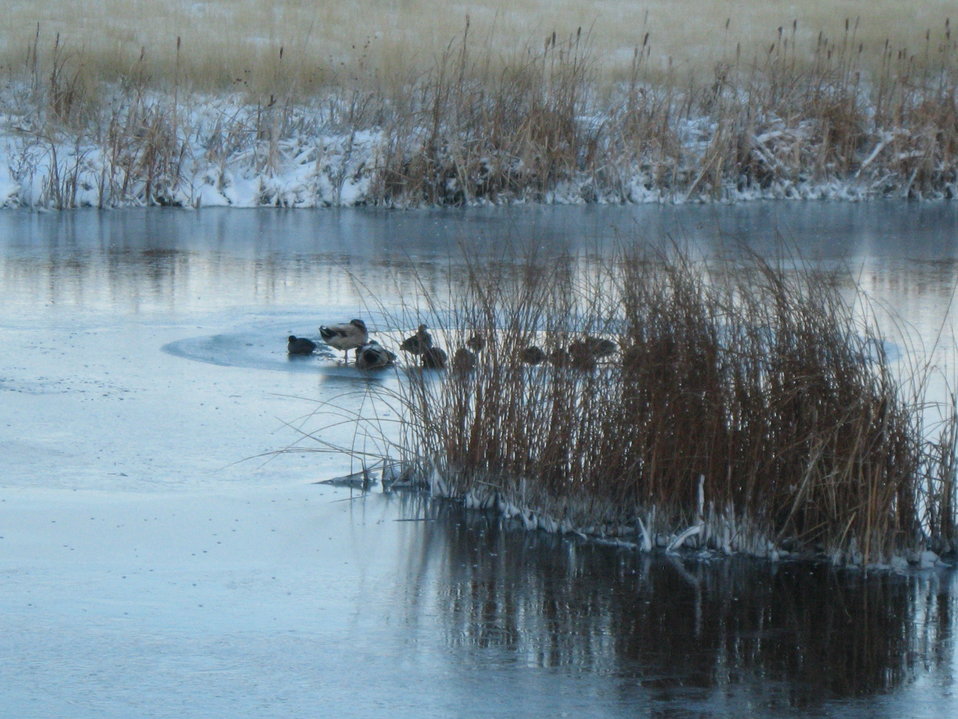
Winter hit hard and fast on Tuesday, November 23, 2010 leaving only this small open water for ducks, coots and grebes in front of the Wildlife Education Center at Bear River Migratory Bird Refuge in Utah.